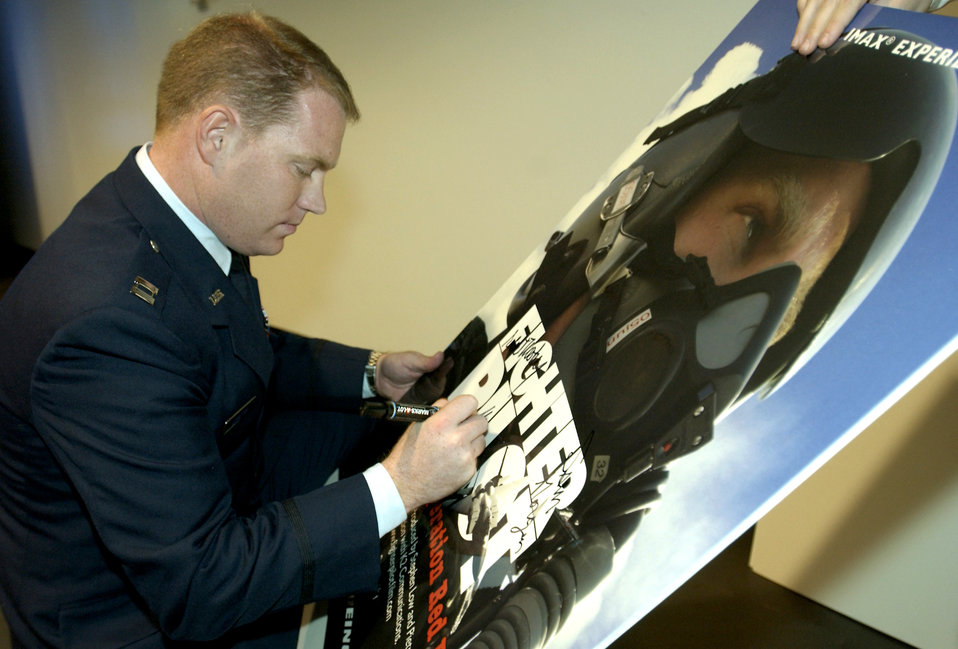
Fighter pilot film about teamwork, thrill of flight

CHANTILLY, Va. -- Capt. John Stratton signs a movie poster at the premier of the new IMAX film